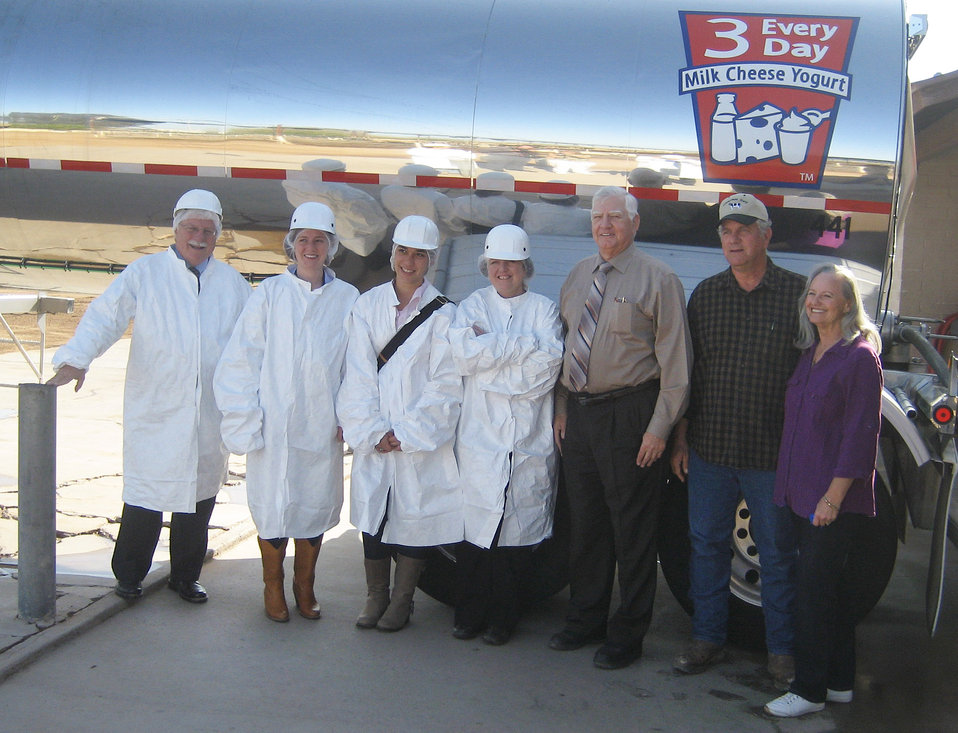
Agriculture Deputy Secretary Dr. Kathleen Merrigan visits the Zimmerman Dairy Farm in Queen Creek, Arizona, on Tuesday, March 27, 2012.